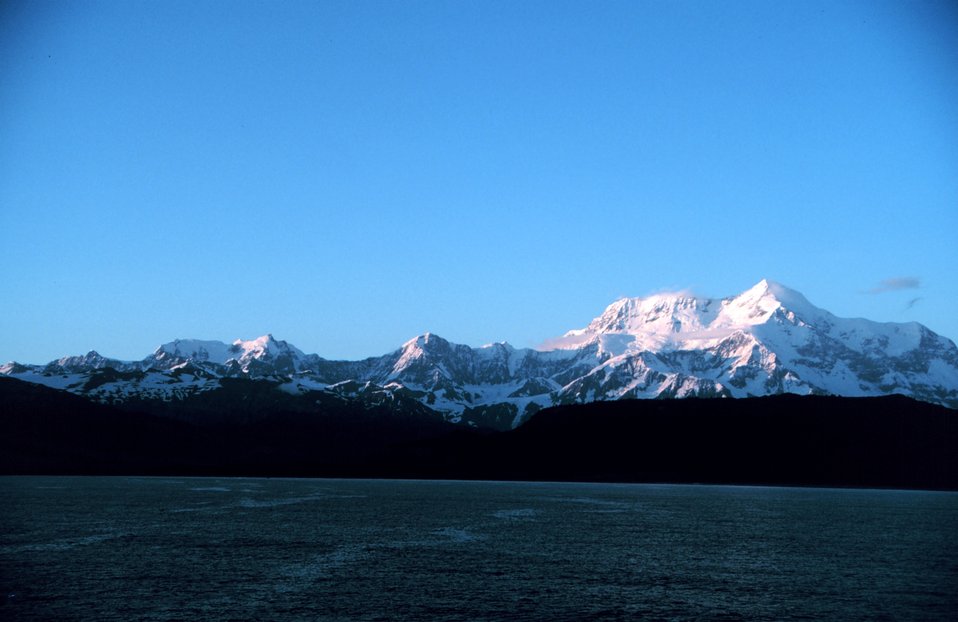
Photo #16 of Mount St. Elias sequence. Mount Saint Elias is one of the largest mountains visible from the sea on the North American continent. It rises to a height of 18,008 feet in a distance of less than 20 miles from sea level at Icy Bay.